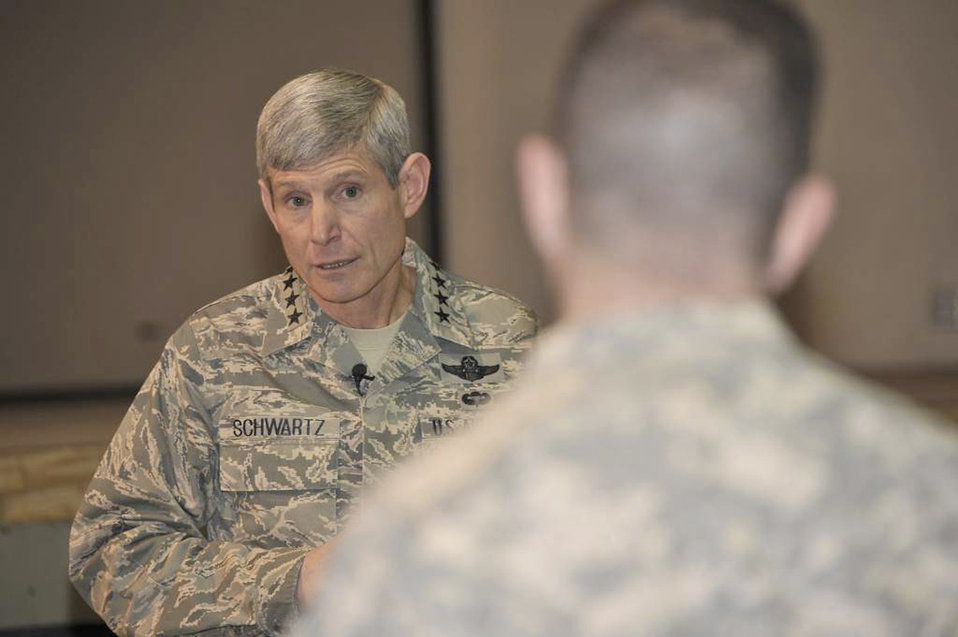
CSAF meets with Airmen

Air Force Chief of Staff Gen. Norton Schwartz answers a question during an